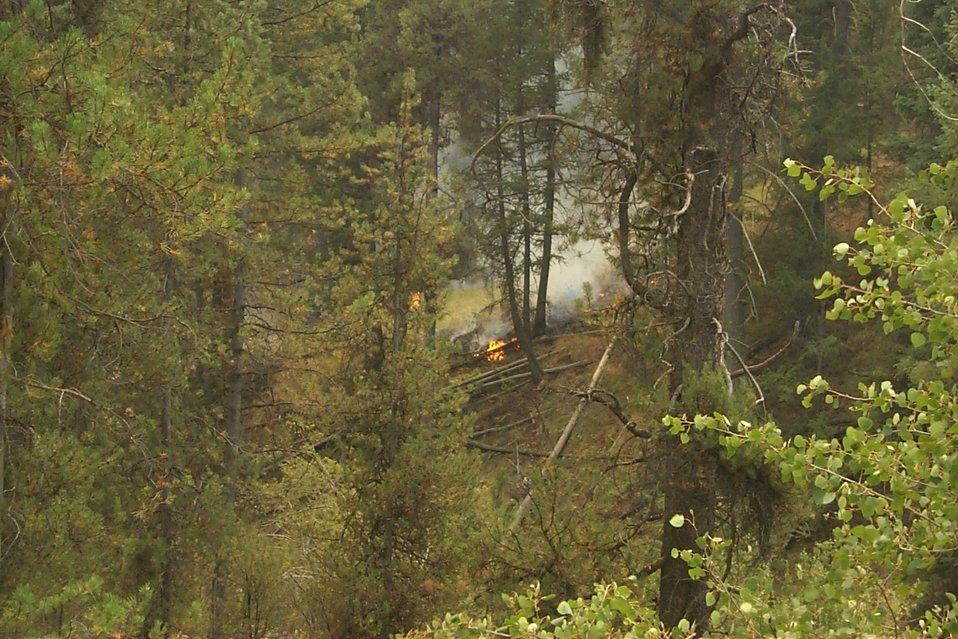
Fire Clearwater Fire Salmon Field Office USRD Upper Snake River District